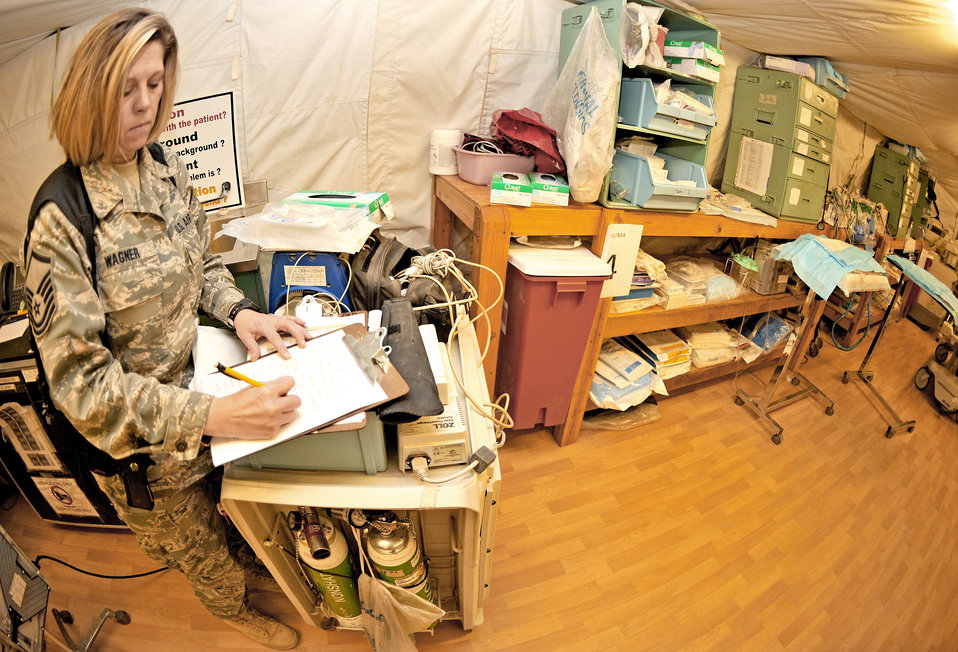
Airmen start next of kin notification process

Master Sgt. Apryl Wagner fills out a Casualty Liaison Team support form with a patient's information inside the combat support hospital Jan. 26, 2011, at Contingency Operating Base Speicher, Iraq. Sergeant Wagner is the 467th Casualty Liaison Team NCO in charge.